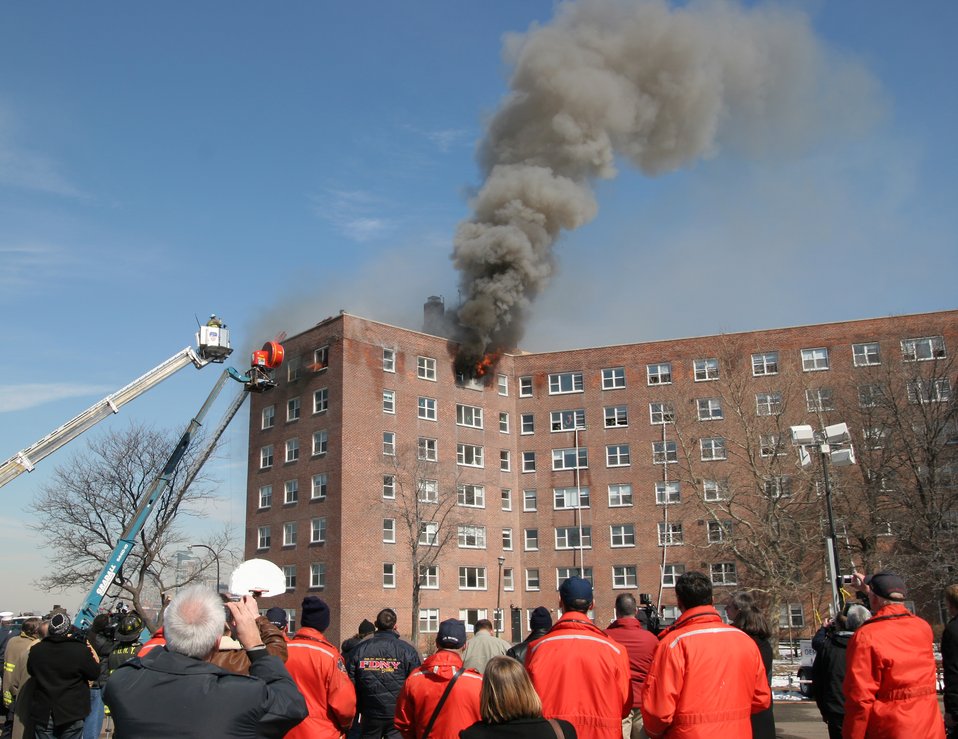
High-Rise Fire Test; Positive Pressure Ventilation Fans

Firefighters watch as a fan, simulating wind, changes airflow and smoke conditions during experiments in a seven-story high-rise abandoned apartment building on New York City's Governors Island. The NIST tests examined firefighting techniques such as the use of positive pressure ventilation fans, wind control devices and hose streams to control or suppress heat and smoke from wind driven fires.